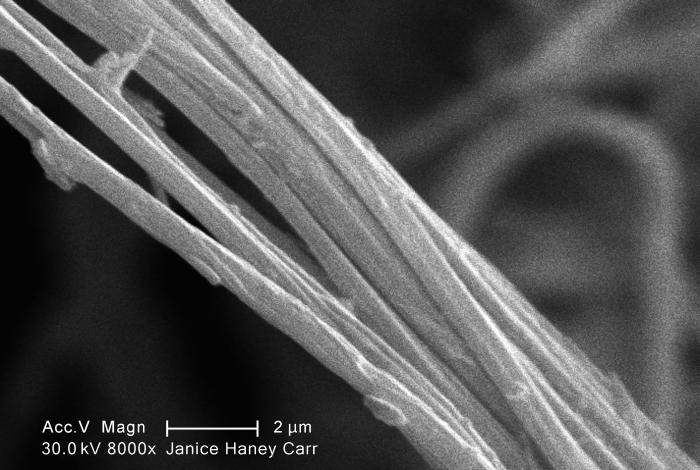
Under a high magnification of 8000X, this scanning electron micrograph (SEM) revealed some of the microcrystalline ultrastructure exhibited by a piece of raw chrysotile, or white asbestos, which had been excavated from the Lowell Asbestos Mine on Belvidere Mountain, Vermont.